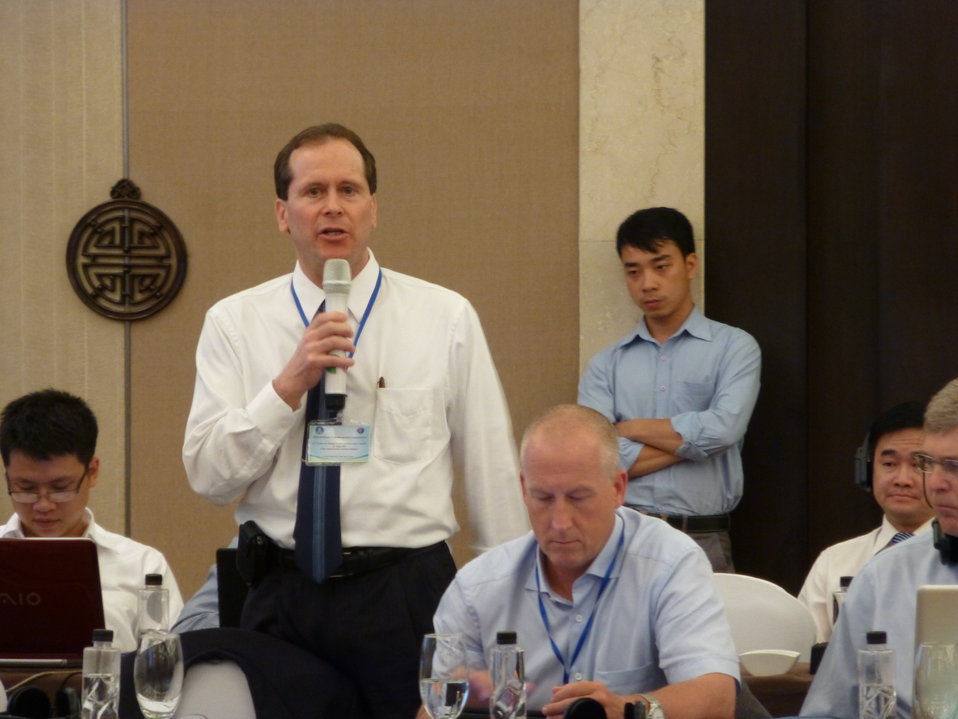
Dr. James Kile, CDC Vietnam, speaks at a Conference on Resource Mobilization for Influenza A (H7N9) Prevention, Control and Preparedness in Vietnam

Hanoi, May 6, 2013
Supported by USAID Vietnam